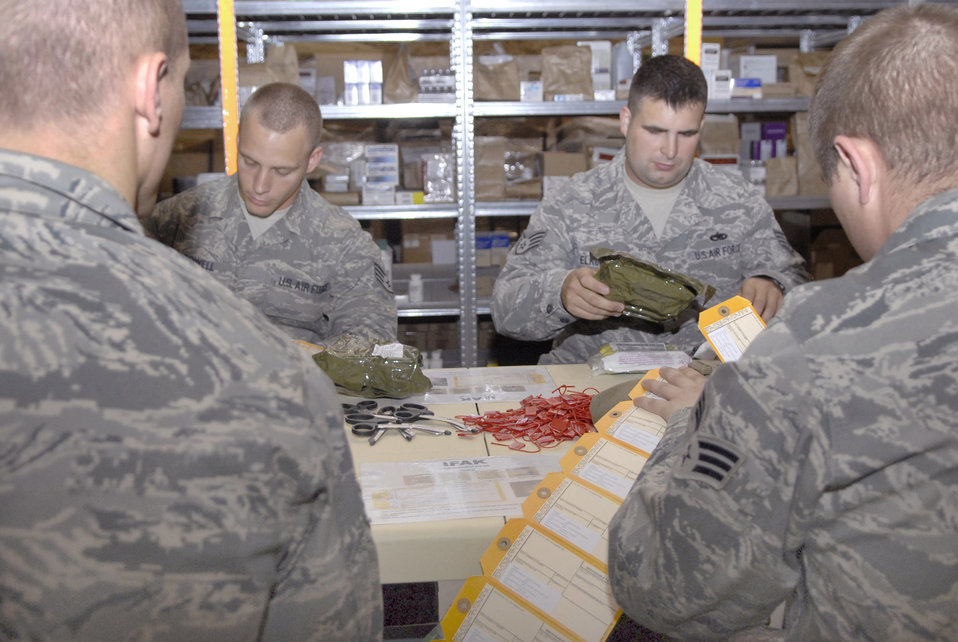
Pitching in

Senior Airman Jonathan Bose, Senior Airman Nathaniel Hildreth, Staff Sgt. William Powell and Staff Sgt. Brandon Elkins toss completed individual first aid kits they assembled into a bin April 9 at an air base in Southwest Asia. The volunteers put in checked for anything out of date to ensure the kits being distributed to personnel downrange are effective. Airman Hildreth hails from Cincinnati, and is deployed from Ramstein Air Base, Germany. Sergeant Powell hails from Ridgeland, Miss., and is deployed from McChord Air Force Base, Wash. Sergeant Elkins hails from Norwalk, Wis., and is deployed from Tyndall AFB, Fla. Airman Bose hails from Terre Haute, Ind., and is deployed from the Hulman Field, Ind. All are from the 379th Expeditionary Communications Squadron.